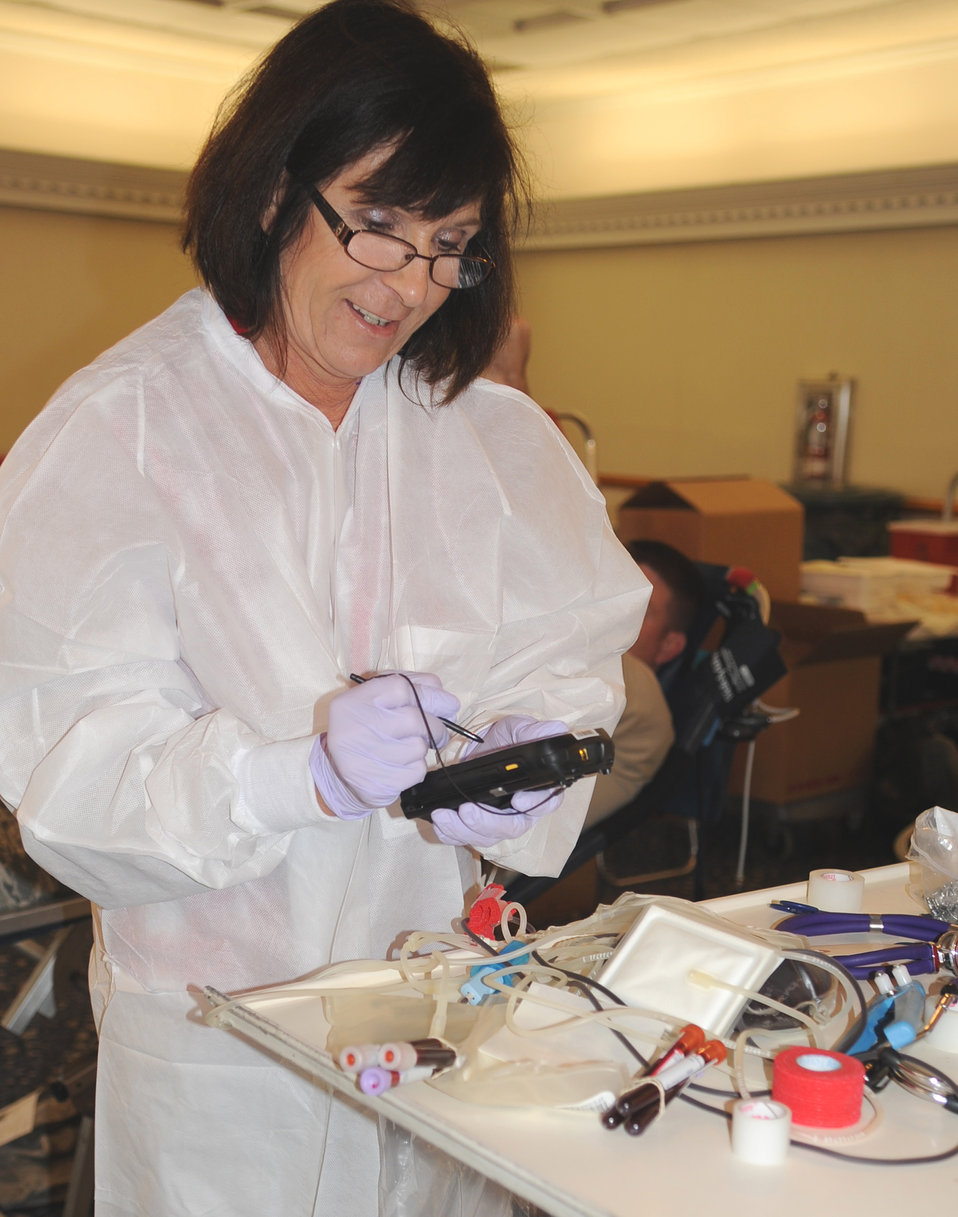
Draining the veins, for a good cause

SEYMOUR JOHNSON AIR FORCE BASE, N.C. – Liz Miller, American Red Cross medical technician, documents and stores donated blood at Seymour Johnson Air Force Base, Nov. 10, 2011. The Red Cross is not a government agency; it relies on donations of time, money, and blood to operate.